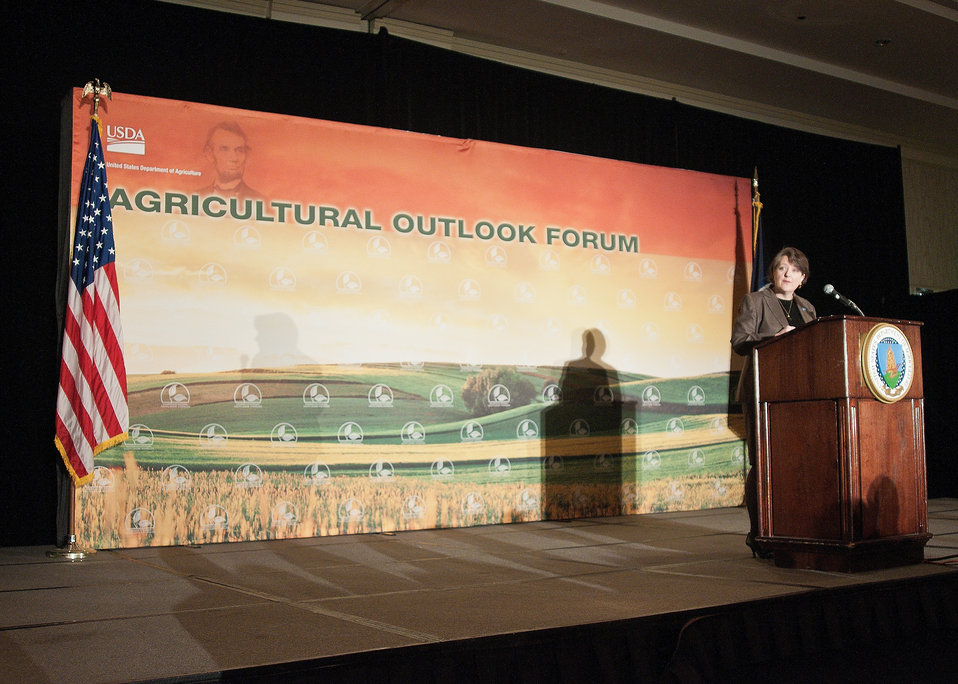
At the 2012 Agricultural Outlook Forum, “Moving Agriculture Forward” in Arlington, VA, held on Thursday, February 23, 2012. Agriculture Deputy Secretary Kathleen Merrigan makes opening remarks at the conference.